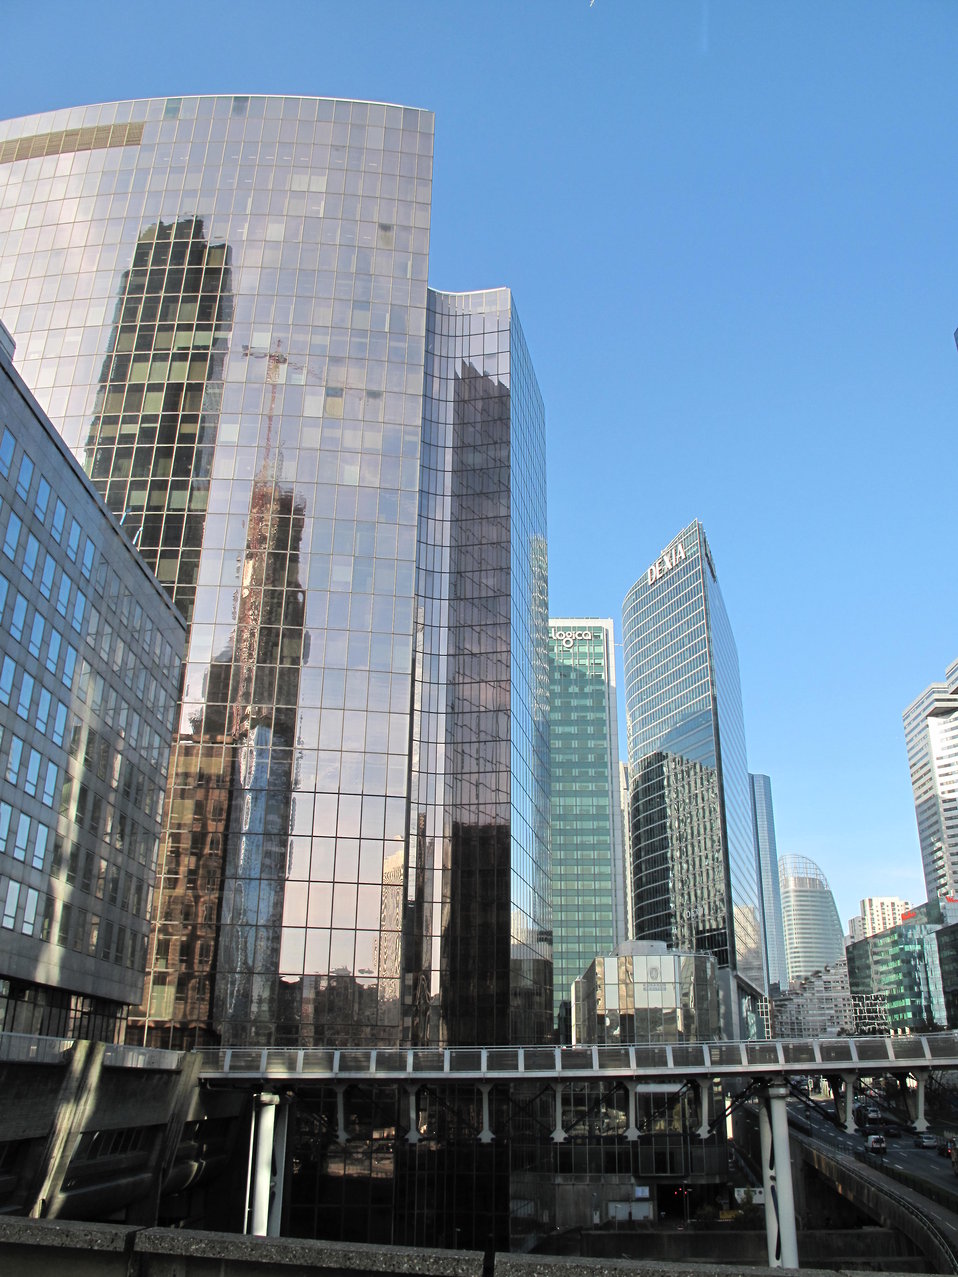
Quarter la Defense 2 near Paris Français : Quartier de la Défense 2 près de Paris